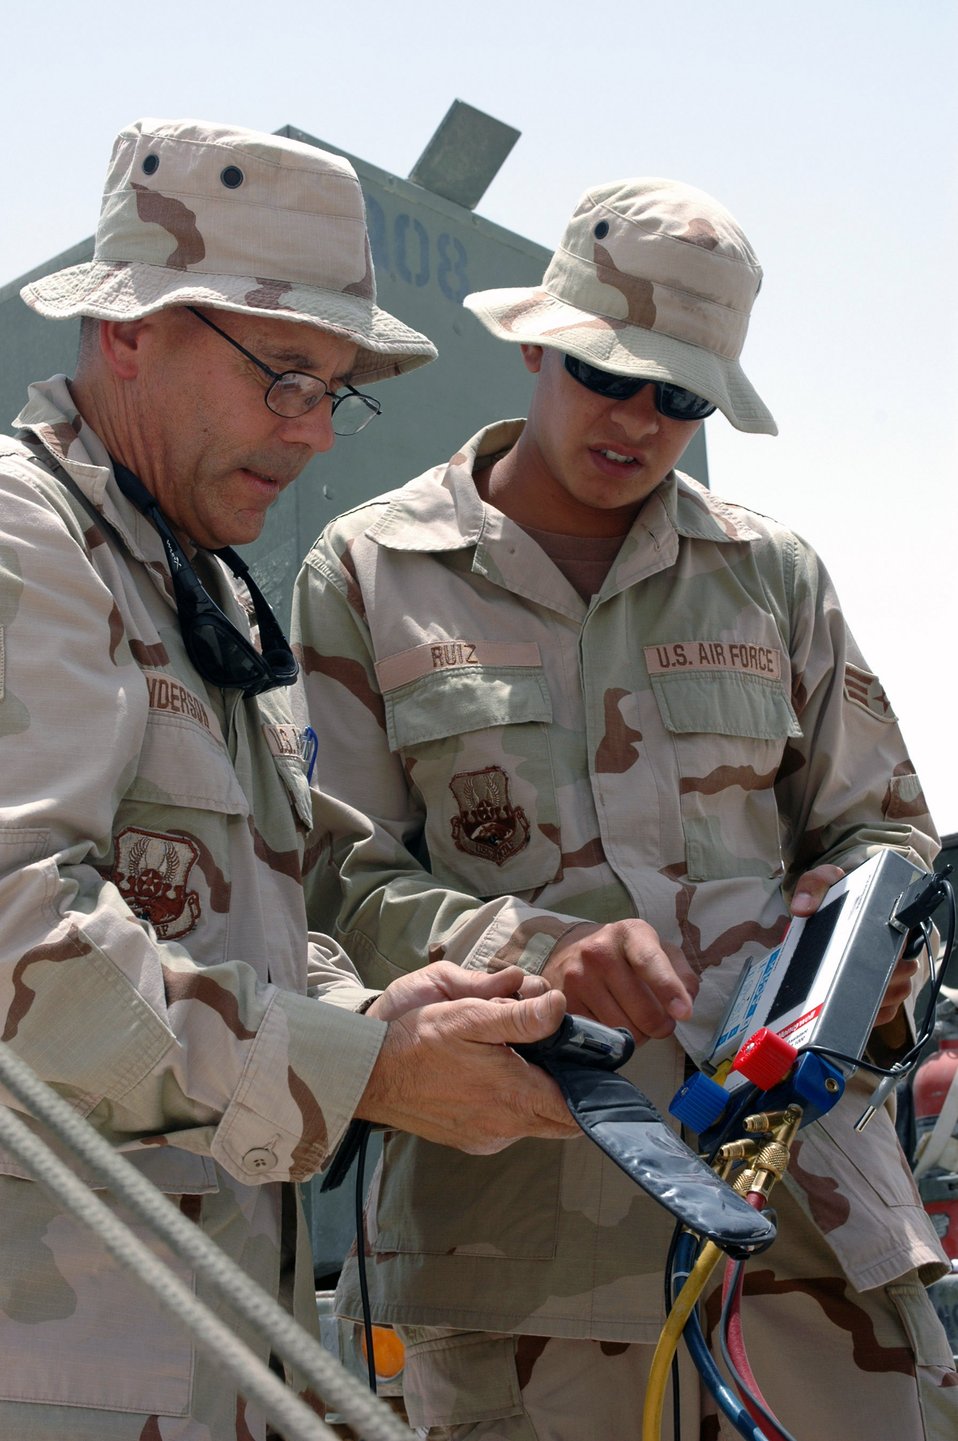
Total force unit controls sky over combat theater

Staff Sgt. John Anderson and Senior Airman Solomon Ruiz fix the air conditioning levels at the Control and Reporting Center in Southwest Asia. There are eight CRC's currently participating in Operation Iraqi Freedom, Operation Enduring Freedom and in the United States. Considered to be a high-density, low-demand asset, these units can take their systems and equipment and set up in a bare base location anywhere in the world within 24 hours. Sergeant Anderson and Airman Ruiz are assigned to the 71st Expeditionary Air Control Squadron.